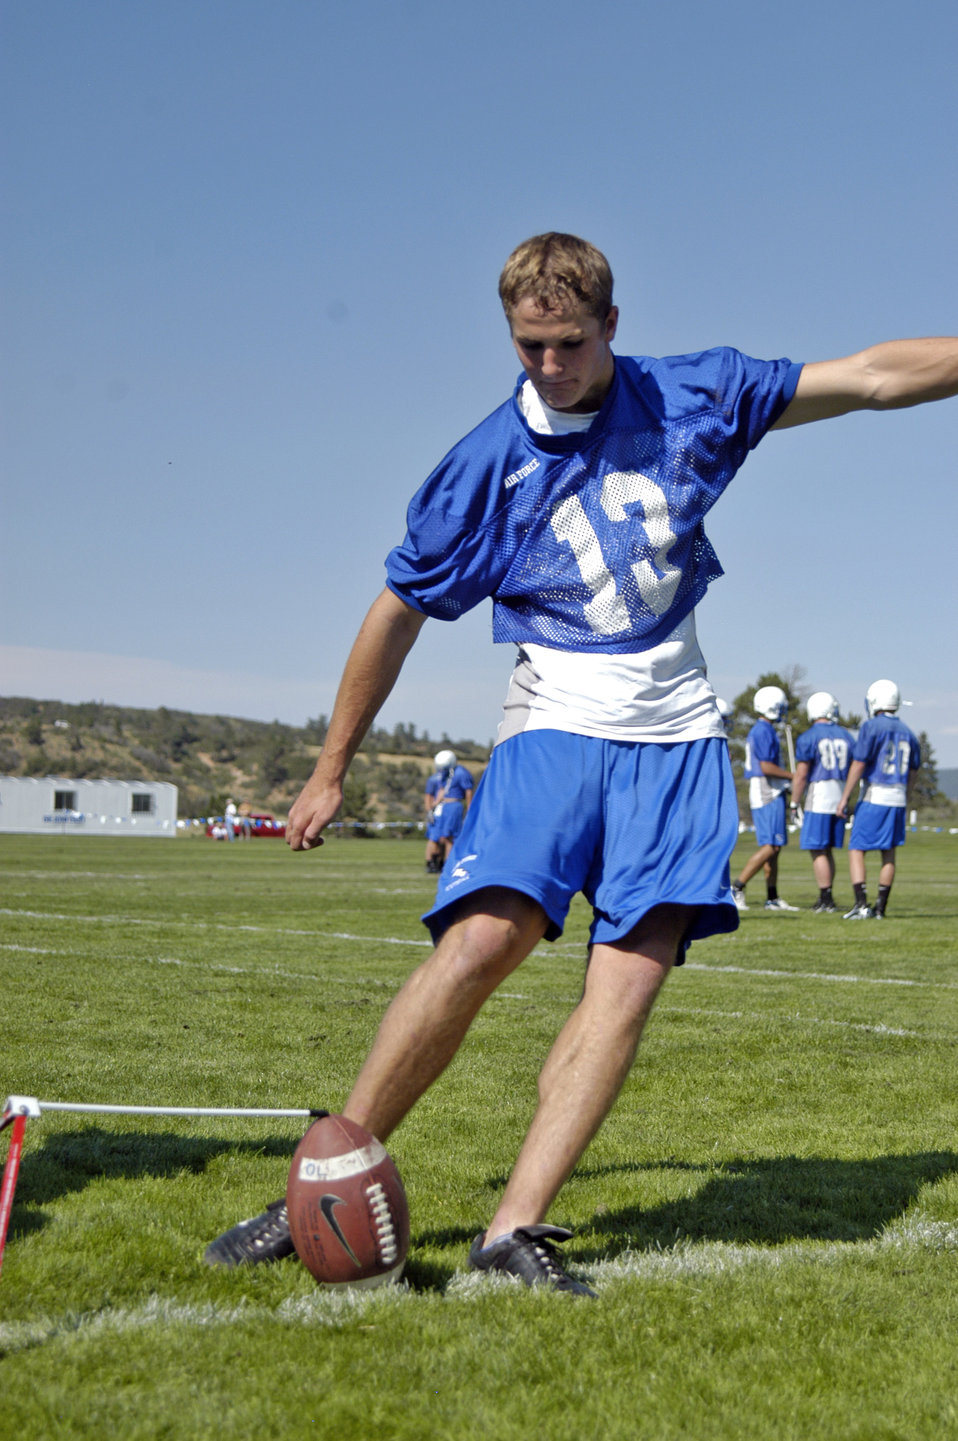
Falcons have everything to prove this football season

Air Force senior place kicker Ryan Harrison practices with a kicking tee during the Falcons' season-opening practice Aug. 1 at the Air Force Academy in Colorado Springs, Colo.